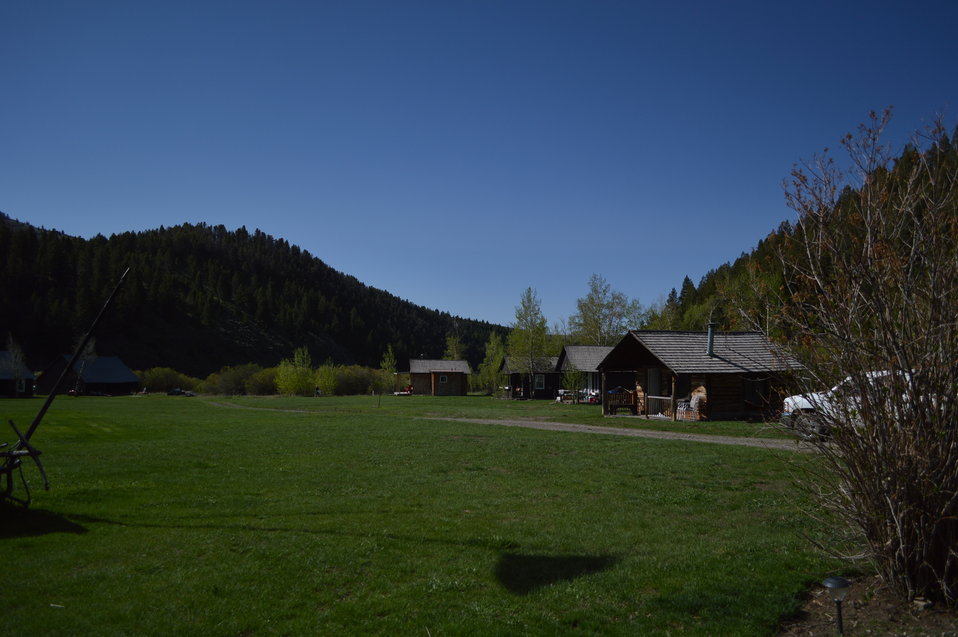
Regional Leadership Visit to Montana 2014